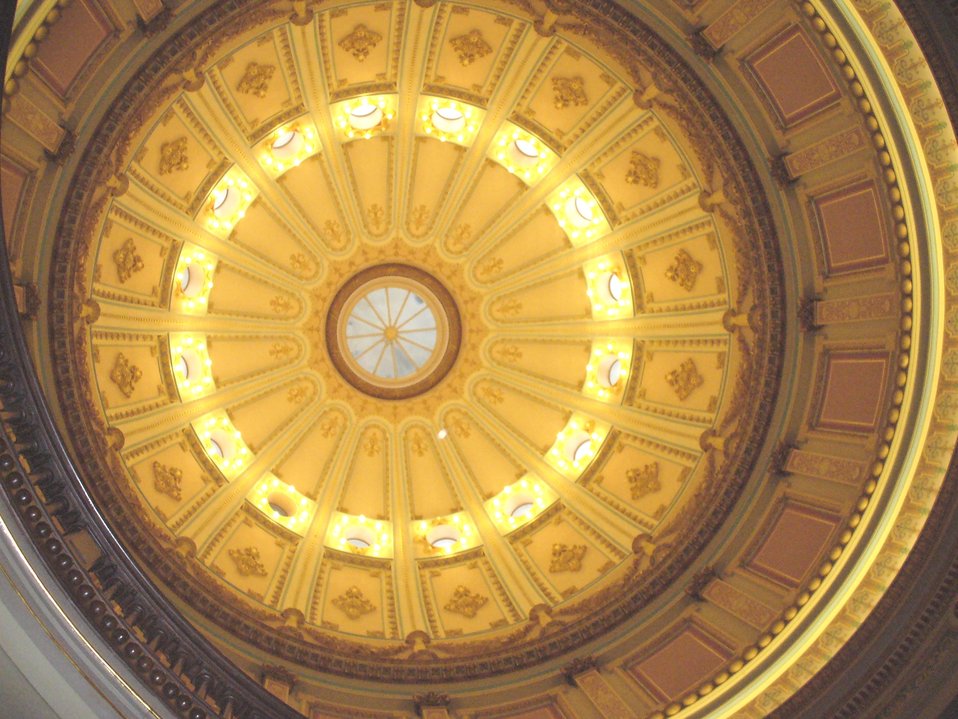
Looking up in the rotunda.